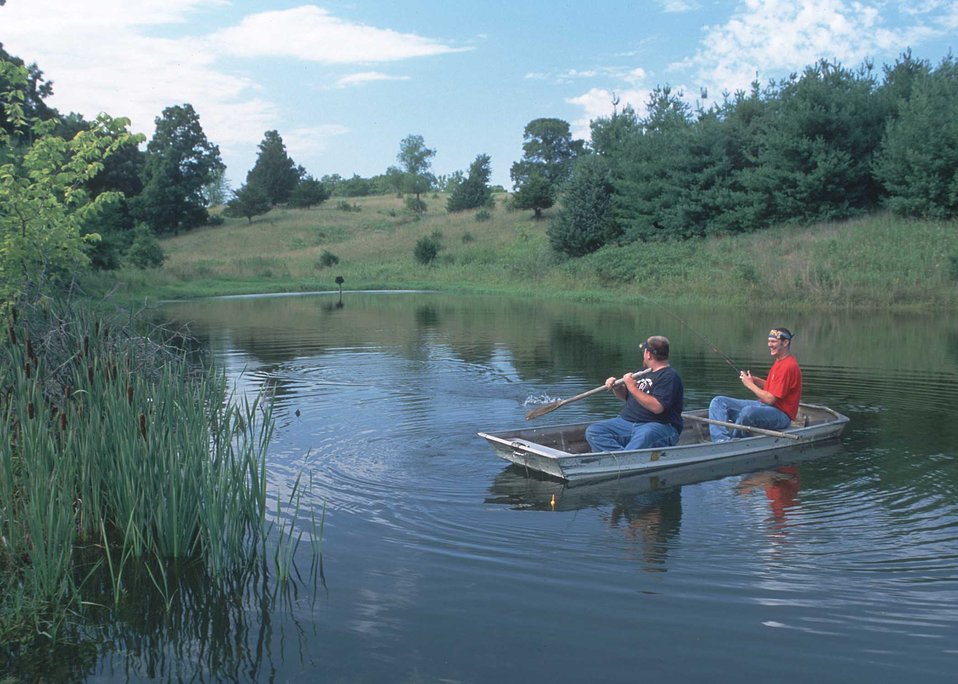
A well-designed farm pond with surrounding wildlife habitat offers excellent recreation in rural Van Buren County, Iowa.